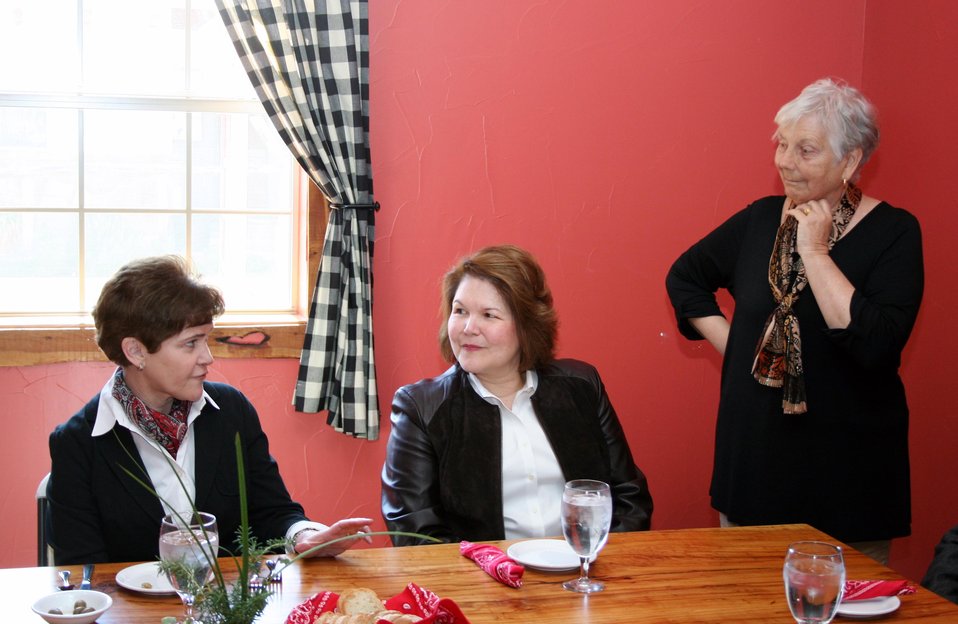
(L to R) Agriculture Deputy Secretary Krysta Harden, U.S. Department of Agriculture (USDA) Farm Service Agency (FSA) Texas State Director Judy Canales visit with Sandy Oaks Olive Orchard owner Sandy Winokur in Elemendorf TX on Friday, Feb. 28, 2014.